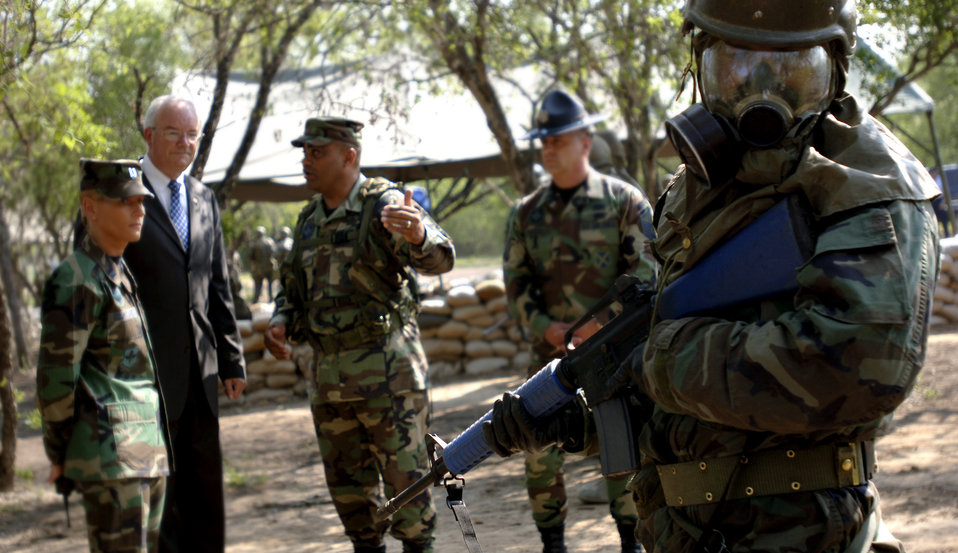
Training briefing

Master Sgt. Gregorio Andrades briefs Secretary of the Air Force Michael W. Wynne on how the Airman wearing a gas mask is taught to guard a unexploded ordnance at Lackland Air Force Base, Texas, on Friday, June 2, 2006. This field training is part of the core curriculum for Air Force basic trainees.